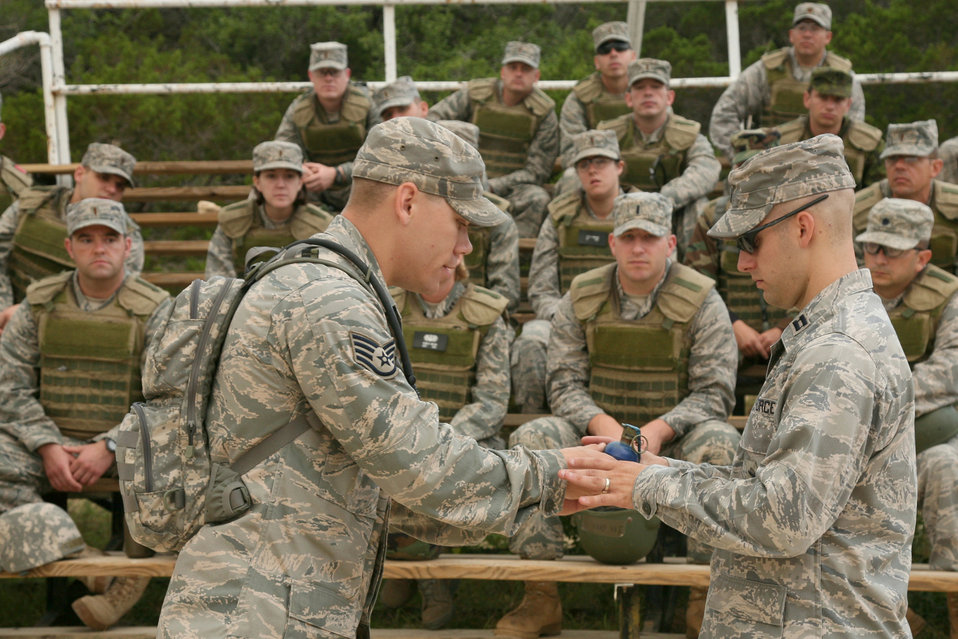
Training with a bang!

Staff Sgt. John Plemons and Capt. Ryan Natalini, members of the 343rd Training Squadron, demonstrate how to receive a hand grenade from a bay official at Camp Bullis, Texas. The students in the Security Forces Basic Officers' Course will practice with a simulator grenade before moving on to live ordnance.